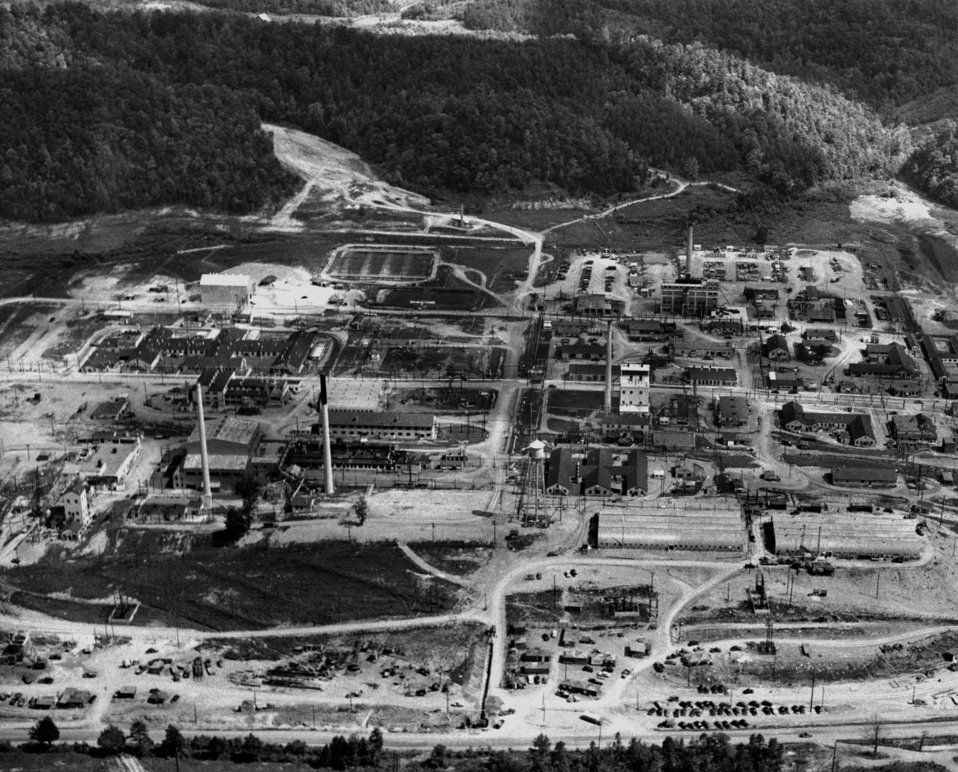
ORNL Aerial Oak Ridge

5765 DOE photo Ed Westcott 7-22-1948 Oak Ridge Tennessee